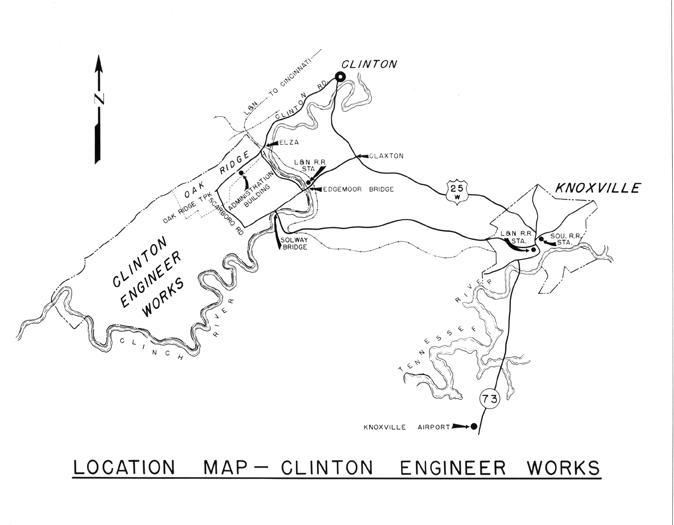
Map Oak Ridge Y-12